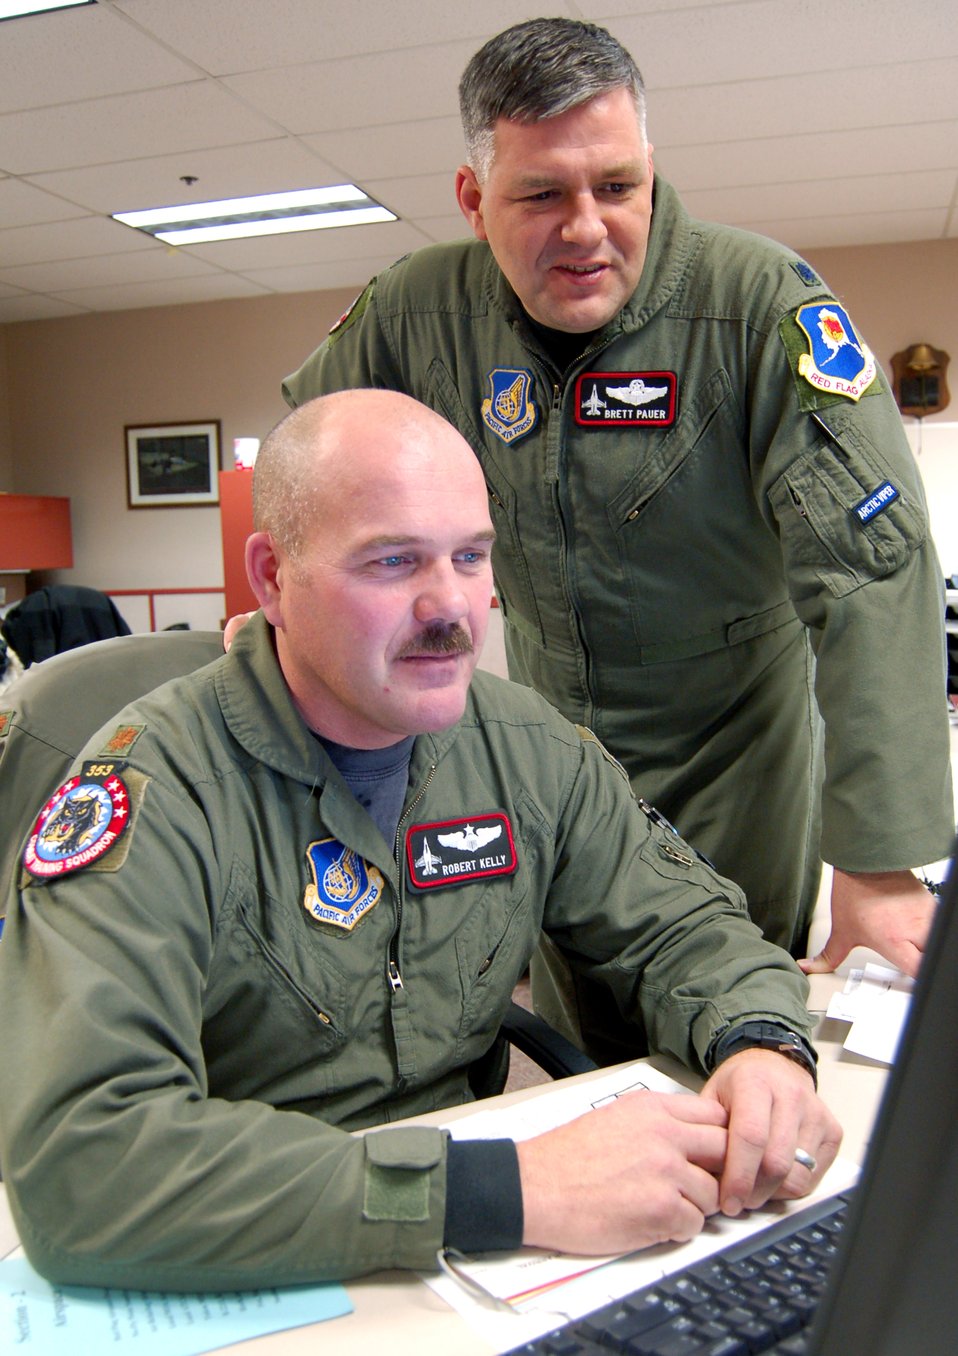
Eielson Airmen get aggressive about training

Maj. Robert Kelly (front) goes over operational mission plans for an upcoming Red Flag-Alaska exercise with Lt. Col. Brett Pauer, director of operations at the 353rd Combat Training Squadron at Eielson Air Force Base, Alaska. Eielson's exercise role is transitioning from Cope Thunder exercises to Red Flag-Alaska. Major Kelly is a weapons officer at the 353rd CTS and soon will be an aggressor pilot for the Red Forces during Red Flag-Alaska exercises.